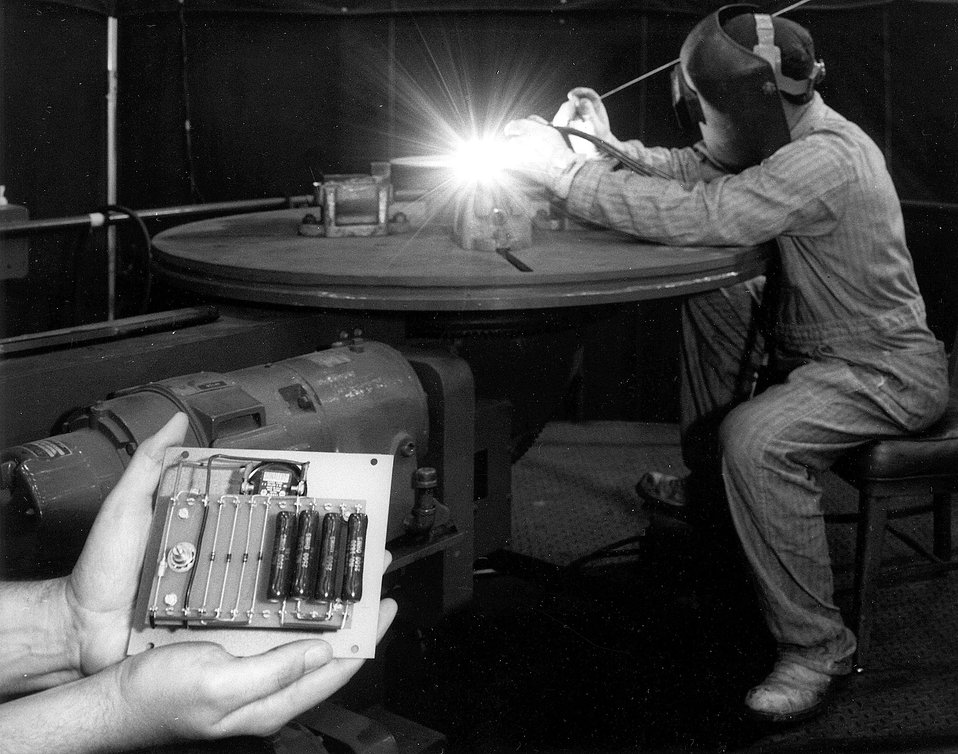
A safety device to protect welding personnel against electrical shock has been developed at the Oak Ridge Y-12 Plant in Tennessee. The voltage sensor is attached to the primary voltage line.